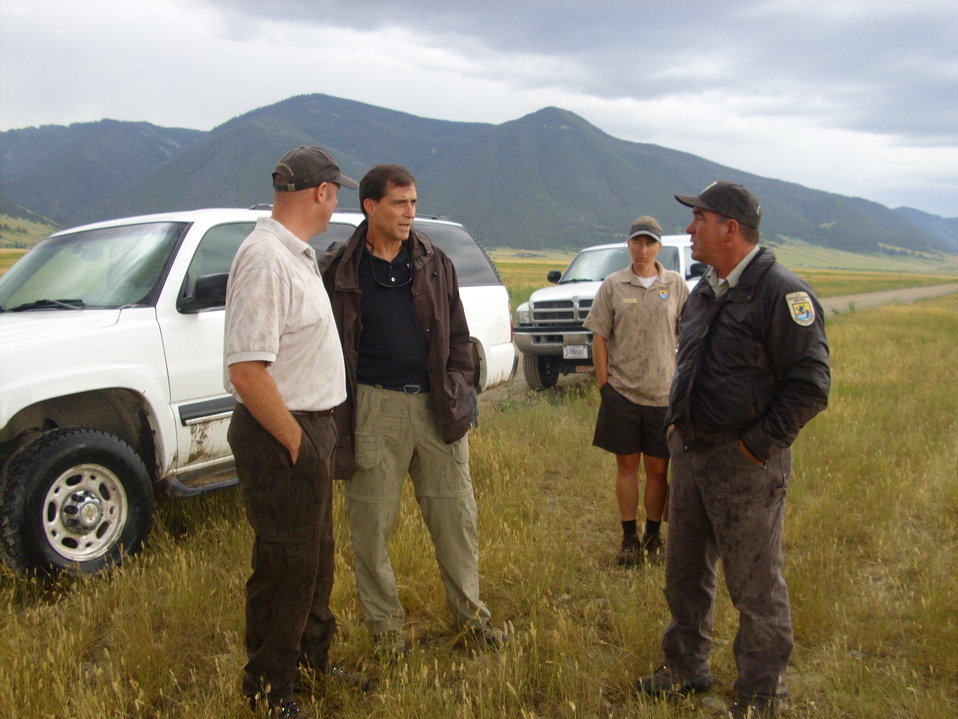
Dan at National Elk

Dan and National Elk staff stop to talk in the shadow of the Grand Tetons.